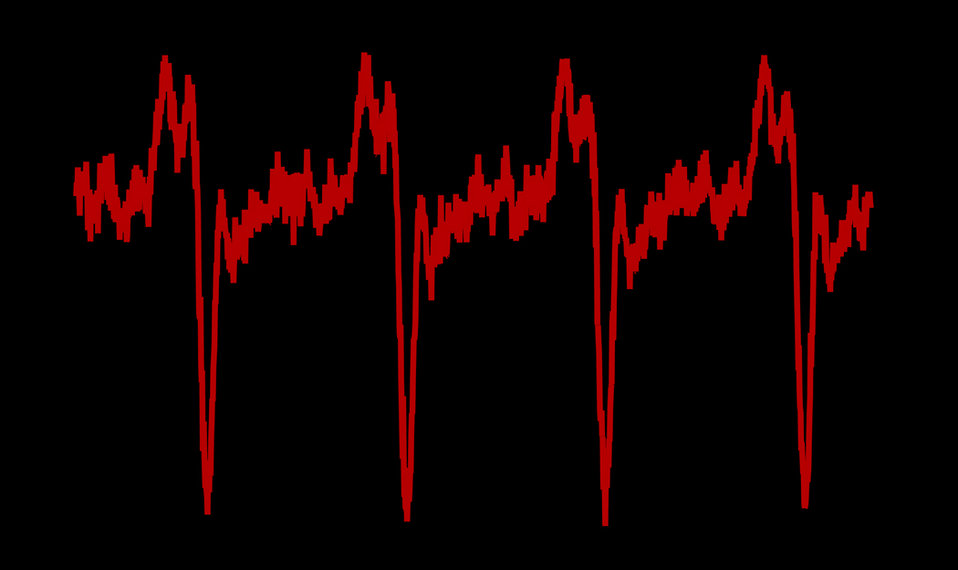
Dark Pulse Laser

Colorized trace of pulses from the NIST/JILA 'dark pulse' laser, indicating the light output nearly shuts down about every 2.5 nanoseconds.